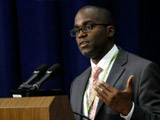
Greg Millett 160x120